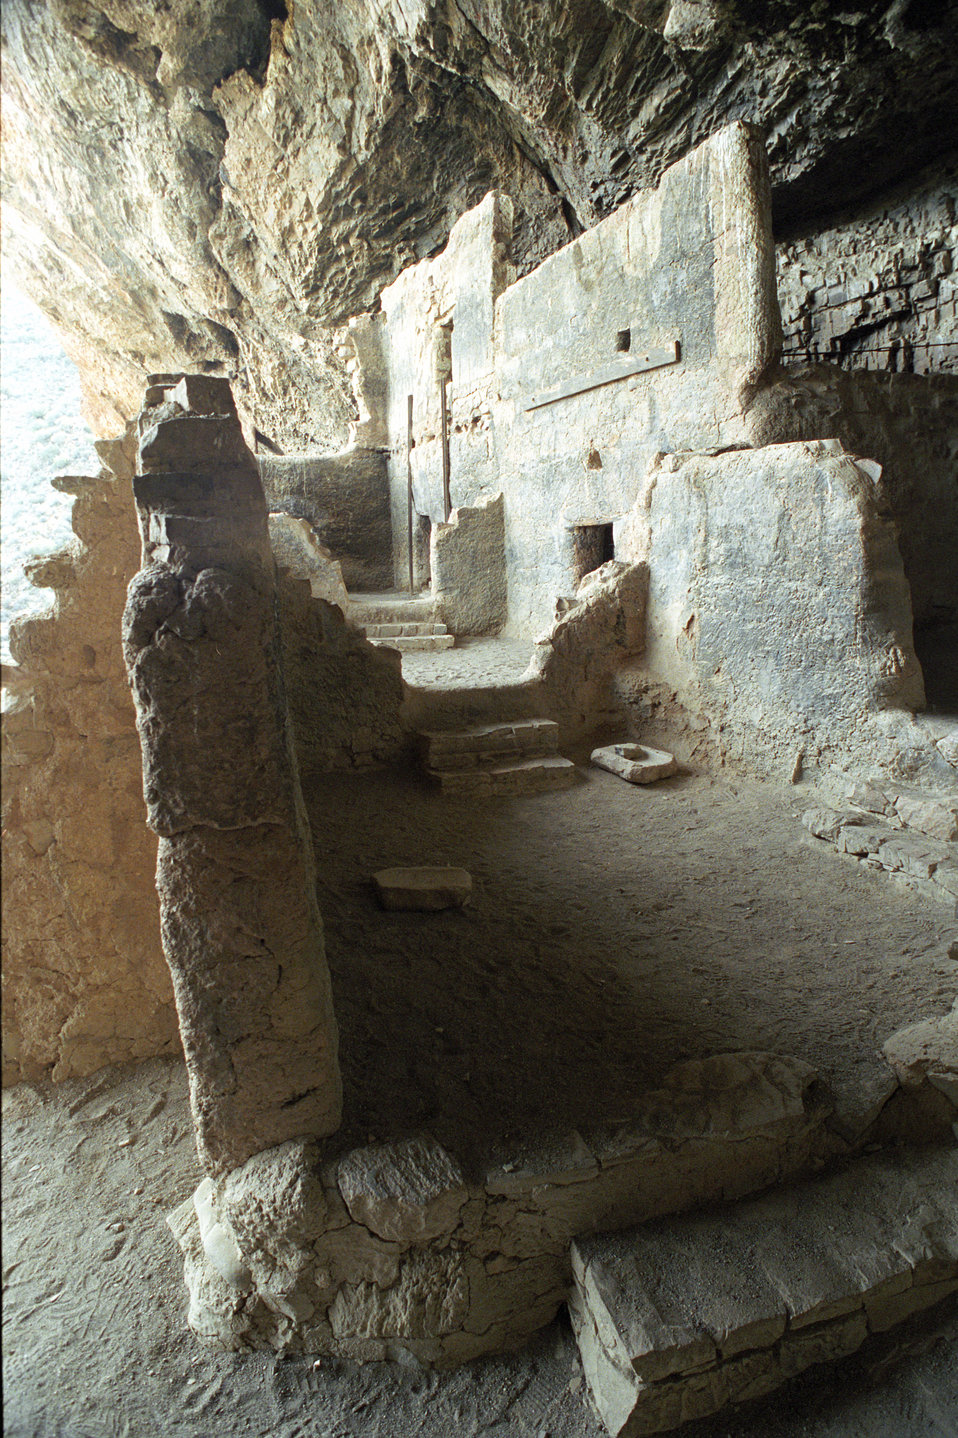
This photograph is of one of the two relatively intact cliff dwellings built by the Salado in the 14th Century in the Tonto Basin of the Tonto National Forest near Tucson, AZ on January 25, 2001. These Arizona cliff dwellings have beautiful multi-room living areas 2 stories tall and made of regional rock cemented together. Wood beams supported roofs and floors. Because of the dry clean atmosphere in those caves, the headers for doors and windows made of native wood have survived.